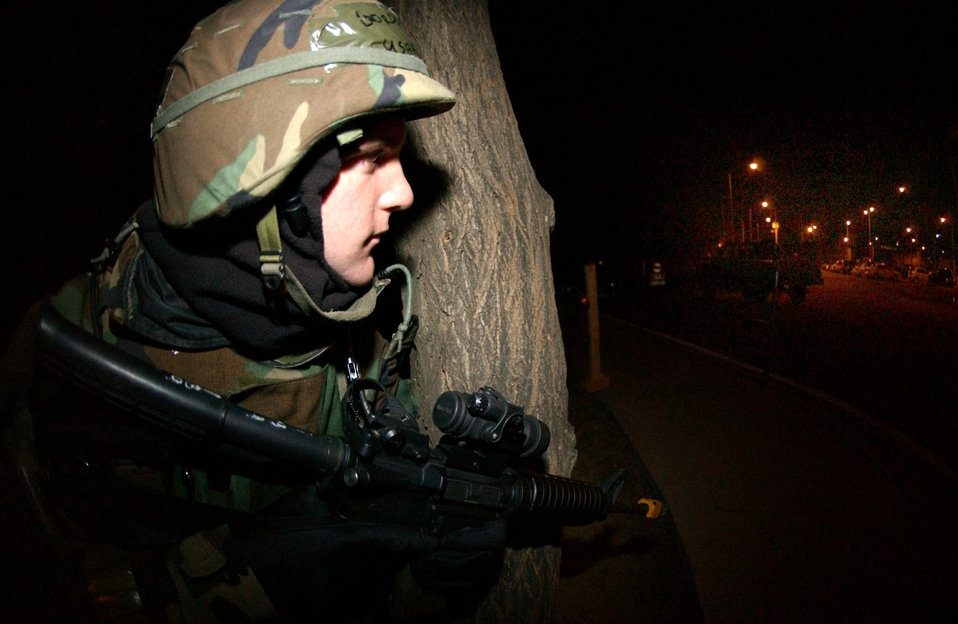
Keep watch

OSAN AIR BASE, South Korea -- Airman 1st Class Gordon Wager keeps watch over a building during an exercise here recently. Airman Wager is assigned to the 51st Security Forces Squadron.